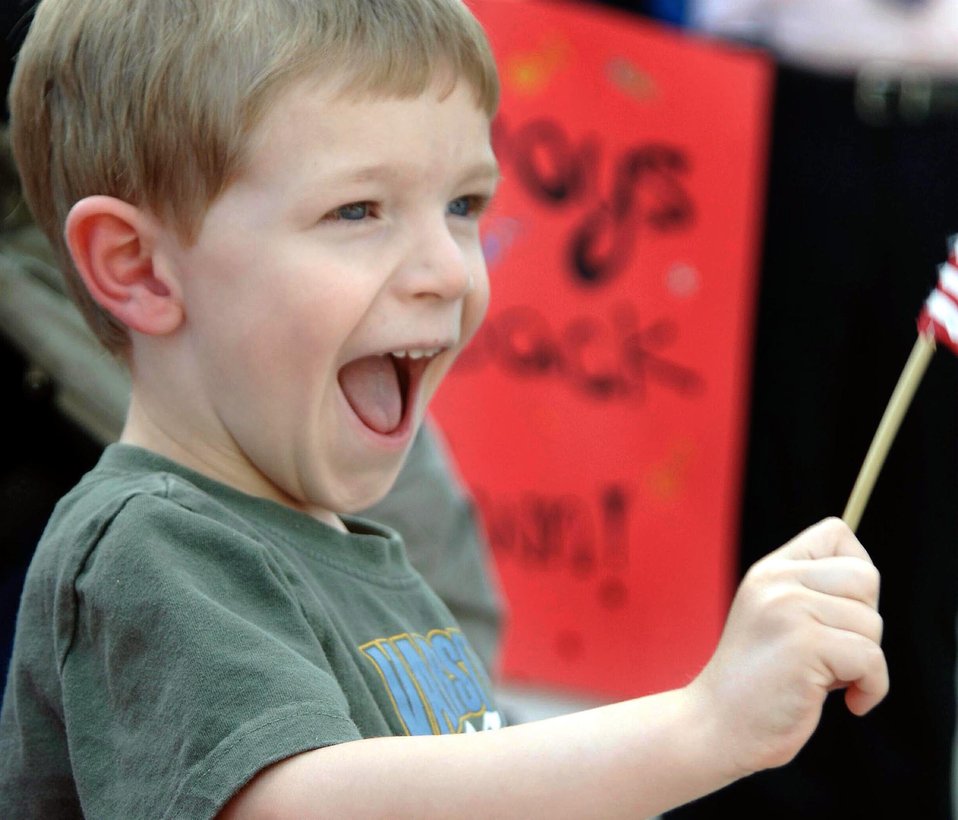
Home again

DAVIS-MONTHAN AIR FORCE BASE, Ariz. (AFPN) -- Three-year-old Jack Culp anticipates his father's return Feb. 8. Jack is the son of Maj. Jon and Katie Culp. Major Culp is an A-10 Thunderbolt II pilot with the 354th Fighter Squadron. He was deployed to Bagram Air Base, Afghanistan, in support of Operation Enduring Freedom.